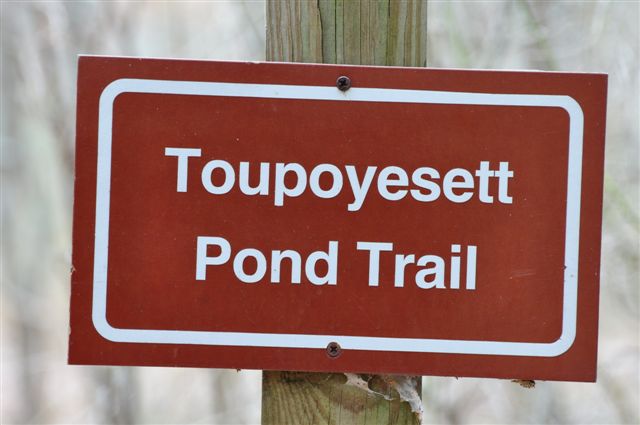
Toupoyesett Pond Trail

Sign at the Ninigret National Wildlife Refuge, Rhode Island.